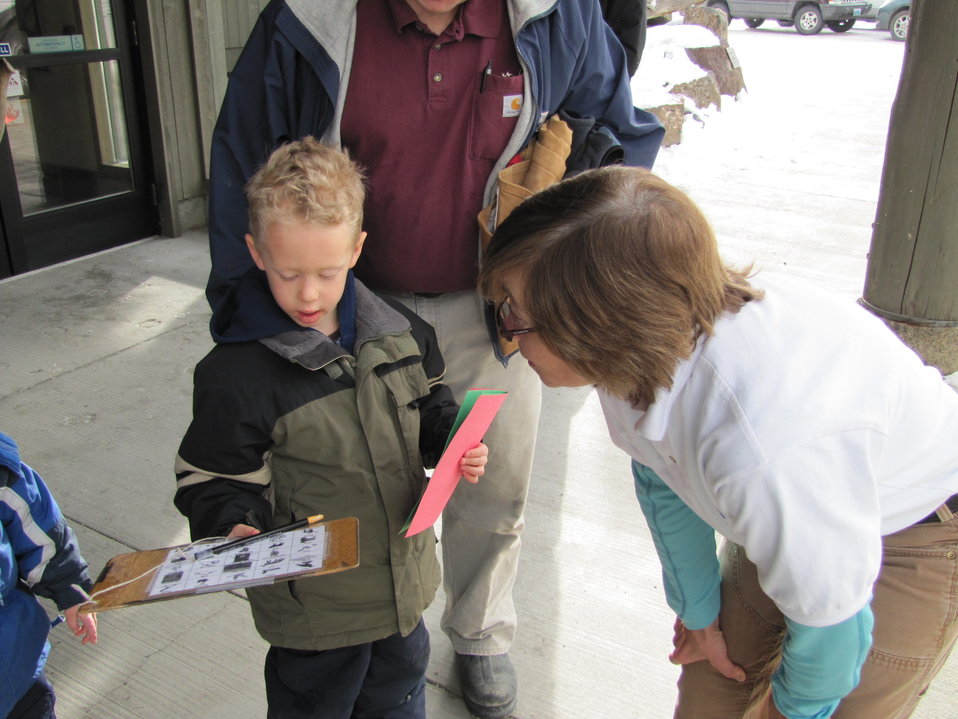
Wildlife Bingo Challenge

A young departing sleigh rider receives instructions for a wildlife bingo game from National Elk Refuge volunteer Chris Clapp.